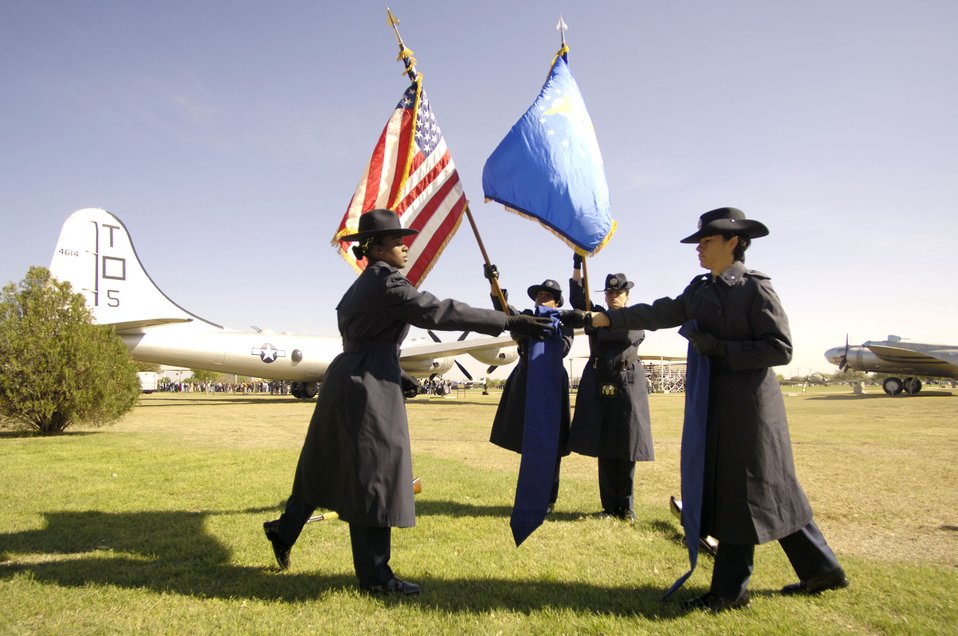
Profession of Arms

Staff Sgt. Angie Hernandez-Torres and Senior Airman Tamika Masters prepare to retire the colors held by Tech. Sgt. Matilda Mahone and Staff Sgt. Rhonda Jeter at the basic military training graduation ceremony Friday, March 24, 2006, at Lackland Air Force Base, Texas, that honored the legacy of women who have shared in the profession of arms. The all-woman color guard detail was followed in the parade ceremony by a formation of more than 30 women and 16 flights of basic trainees led by women flight commanders.